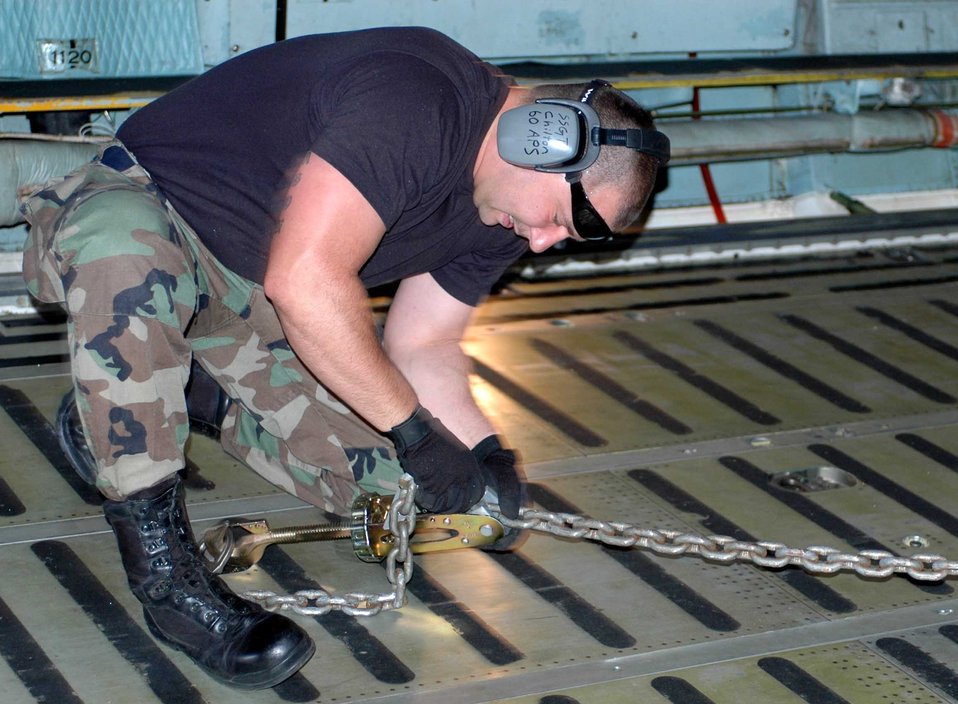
Loading up for Rodeo

Staff Sgt. Joseph Chilton fastens cargo inside a C-5 Galaxy during an engine running on (and) offload team practice June 11 at Travis Air Force Base, Calif. The 60th Aerial Port Squadron team must load and unload a C-5 and a C-17 Globemaster III in the fastest time possible with no safety violations. The practice is in preparation for the 2007 Air Mobility Command's Expeditionary Rodeo to be held in July at McChord AFB, Wash.